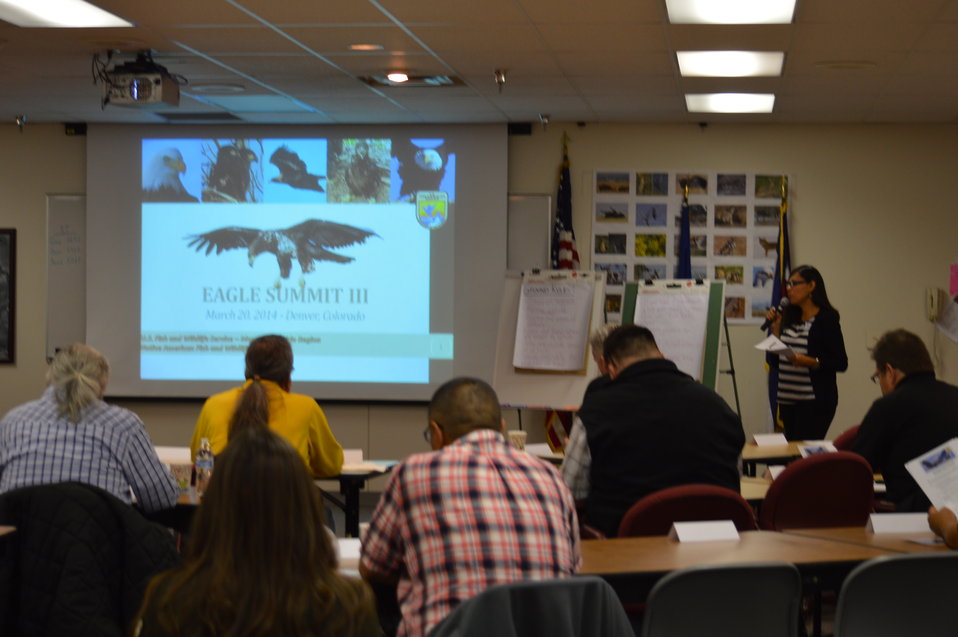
Eagle Summit III

Facilitator kicking off the Eagle Summit III in Denver, Colorado on March 20, 2014 at the Rocky Mountain Arsenal National Wildlife Refuge.